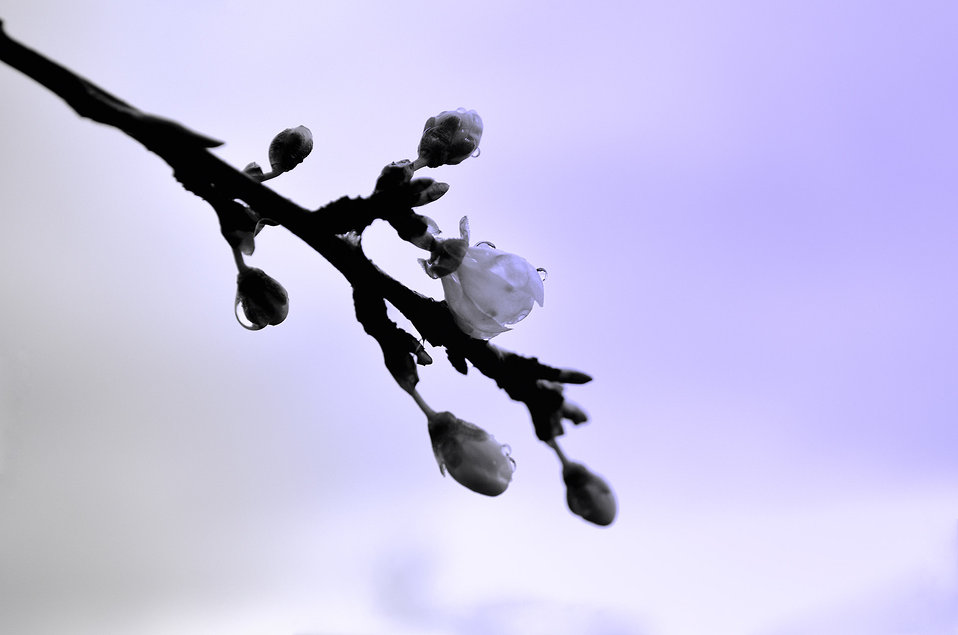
Twig tree in spring.